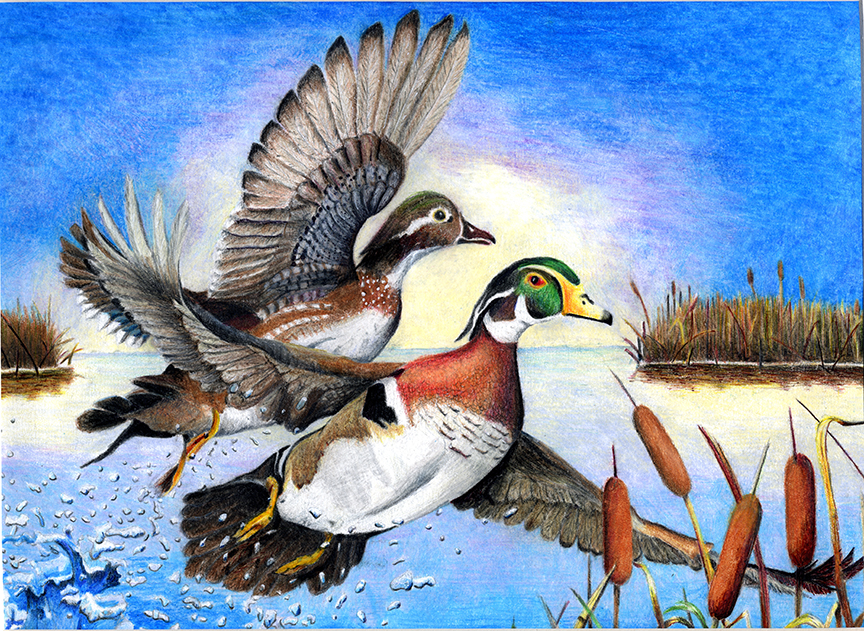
JRDuck2013IN

2013 Junior Duck Stamp Best of Show-Indiana